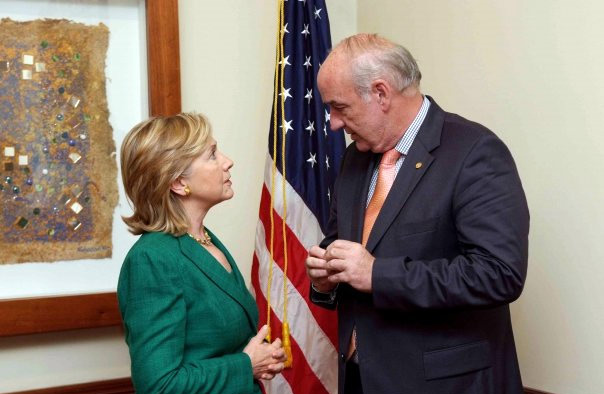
Secretary Clinton With Peruvian Foreign Minister Jose Antonio Garcia-Belaunde

U.S. Secretary of State Hillary Rodham Clinton speaks with Peruvian Foreign Minister Jose Antonio Garcia-Belaunde at the Pathways to Prosperity Conference in San José, Costa Rica, March 4, 2010.